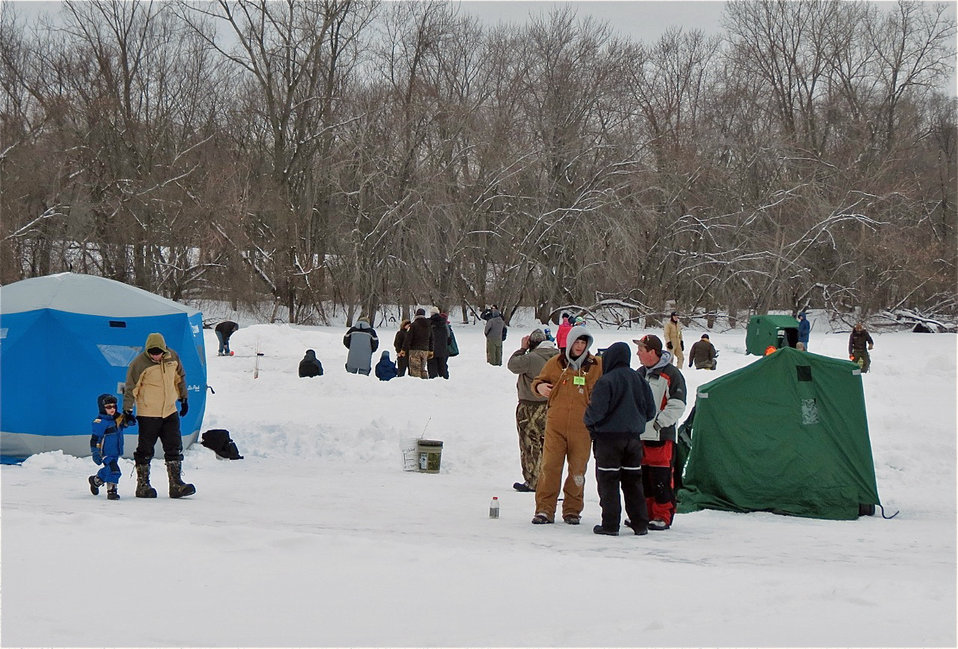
Ice Fishing

A look at some of the participants in the annual youth ice fishing event held on the Upper Mississippi River National Wildlife and Fish Refuge – Winona District.